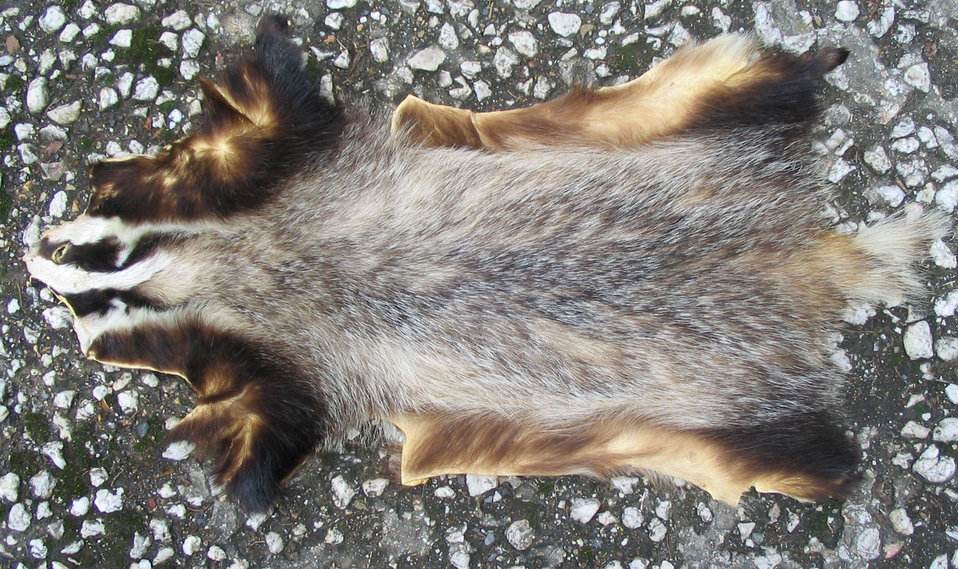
Deutsch: Dachsfell. Provenienz südlicher Westerwald, Karl Friedrich Herhold, erlegt ca. 1987